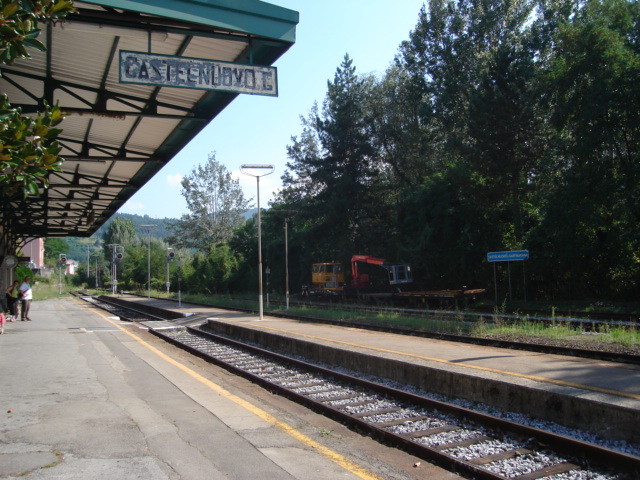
Italiano: stazione di Castelnuovo Garfagnana